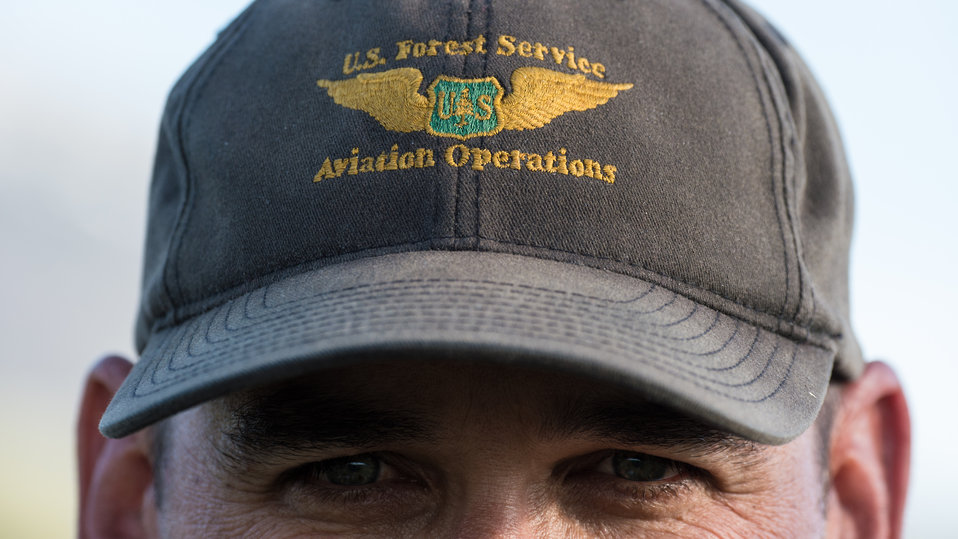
U.S. Department of Agriculture (USDA) U.S. Forest Service (USFS) National Helicopter Rappel Program lead Don Campbell attends the Veteran Rappel Academy at Salmon Air Base in Salmon, ID on Tuesday May 13, 2014. From May 12, 2014, 72 veteran rappellers from all over the nation, 30 support staff, and three helicopters with flight crews attend the training at Salmon Air Base. Participants will rappel into the Perreau Creek area. The annual training is delivered in accordance with the National Rappel Operations Guide; strengthen leadership, teamwork, and communications within the rappel community, and produces quality aerial delivered firefighters for use in fire and aviation operations. The USDA Forest Service National Helicopter Rappel Program’s primary mission is initial attack. Rappel crews may be utilized for large fire support, all hazard incident operations, and resource management objectives.